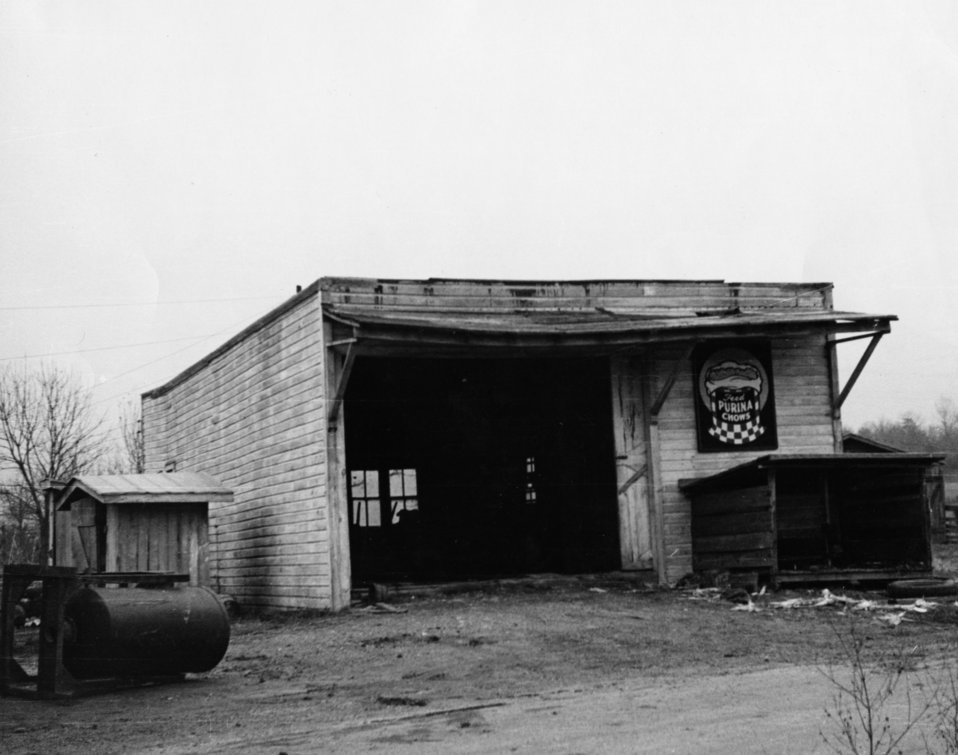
Business activity at Oak Ridge